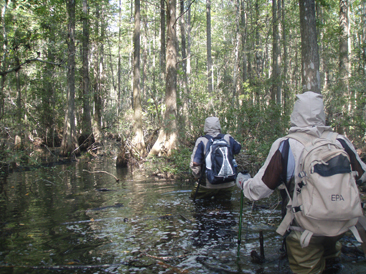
Wading for samples

EPA researchers wade through a mangrove with sampling gear on their backs in Gulf Breeze, Florida.

Learn more about the Great Lakes coastal wetlands